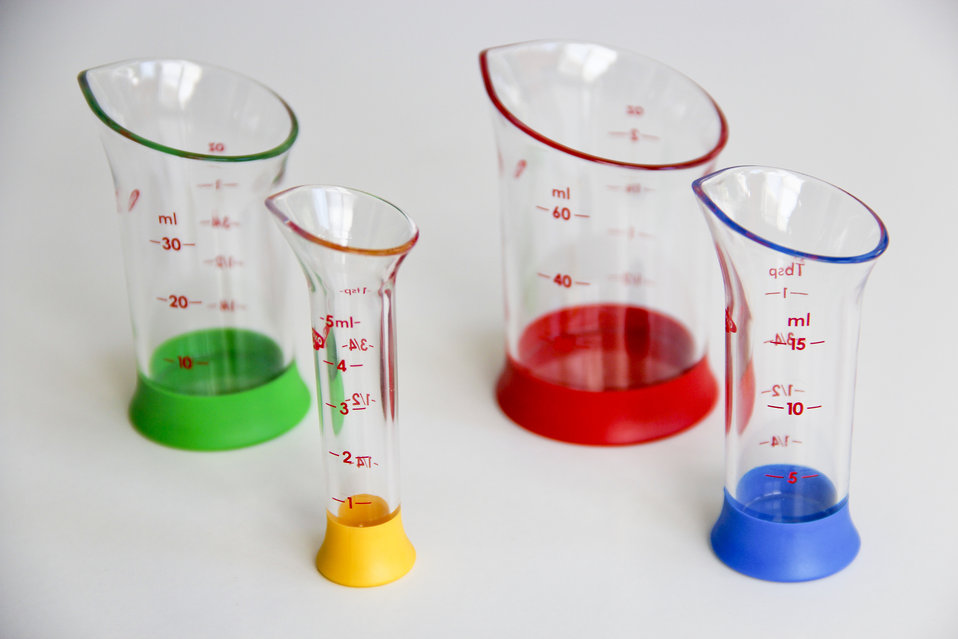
This image depicts a variety of laboratory measuring flasks that are used to provide units of liquid measurement in both milliliters and ounces, in the case of the green and red-bottomed flasks in the background, milliliters and teaspoons in the yellow-bottomed flask at front-left, and milliliters and tablespoons in the case of the blue-bottomed flask at front-right.